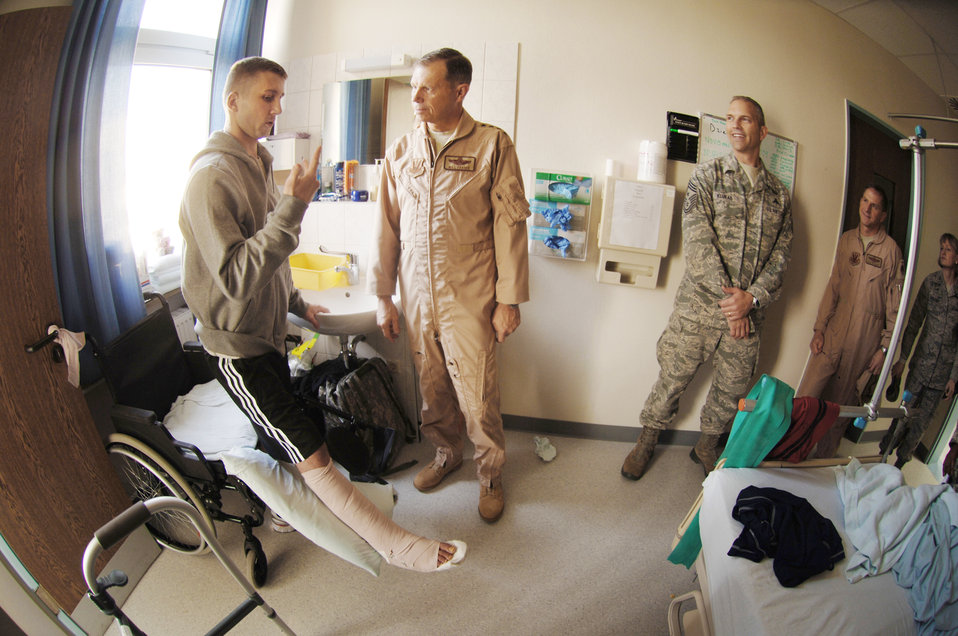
Air Combat Command leaders visit wounded warriors in Landstuhl Regional Medical Center

Gen. William M. Fraser III and Chief Master Sgt. Marty Klukas, (right), visit Landstuhl Regional Medical Center, Germany, Nov. 20, 2009. The leaders met hospital staff and wounded U.S. and coalition servicemembers like Polish Corporal Waldemar Amrozi, who explained how injuries he sustained in Afghanistan nearly cost the loss of his right leg. Since 2004, the hospital has treated more than 58,000 wounded U.S. and coalition servicemembers and civilians injured in Iraq and Afghanistan. General Fraser is the commander of Air Combat Command and Chief Klukas is the ACC command chief.